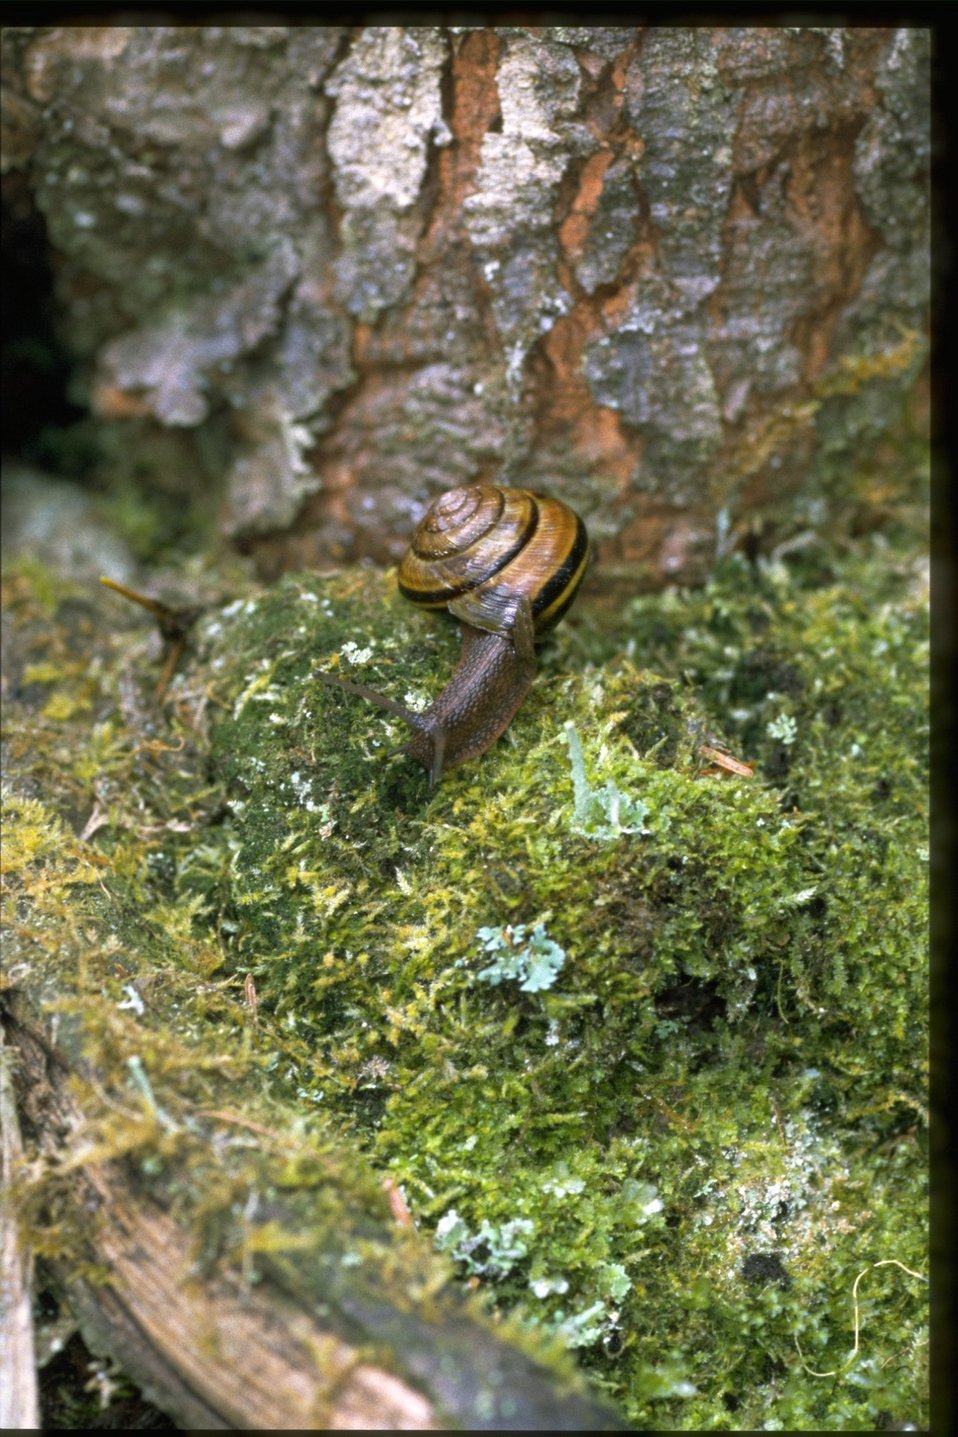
Medium shot of snail.